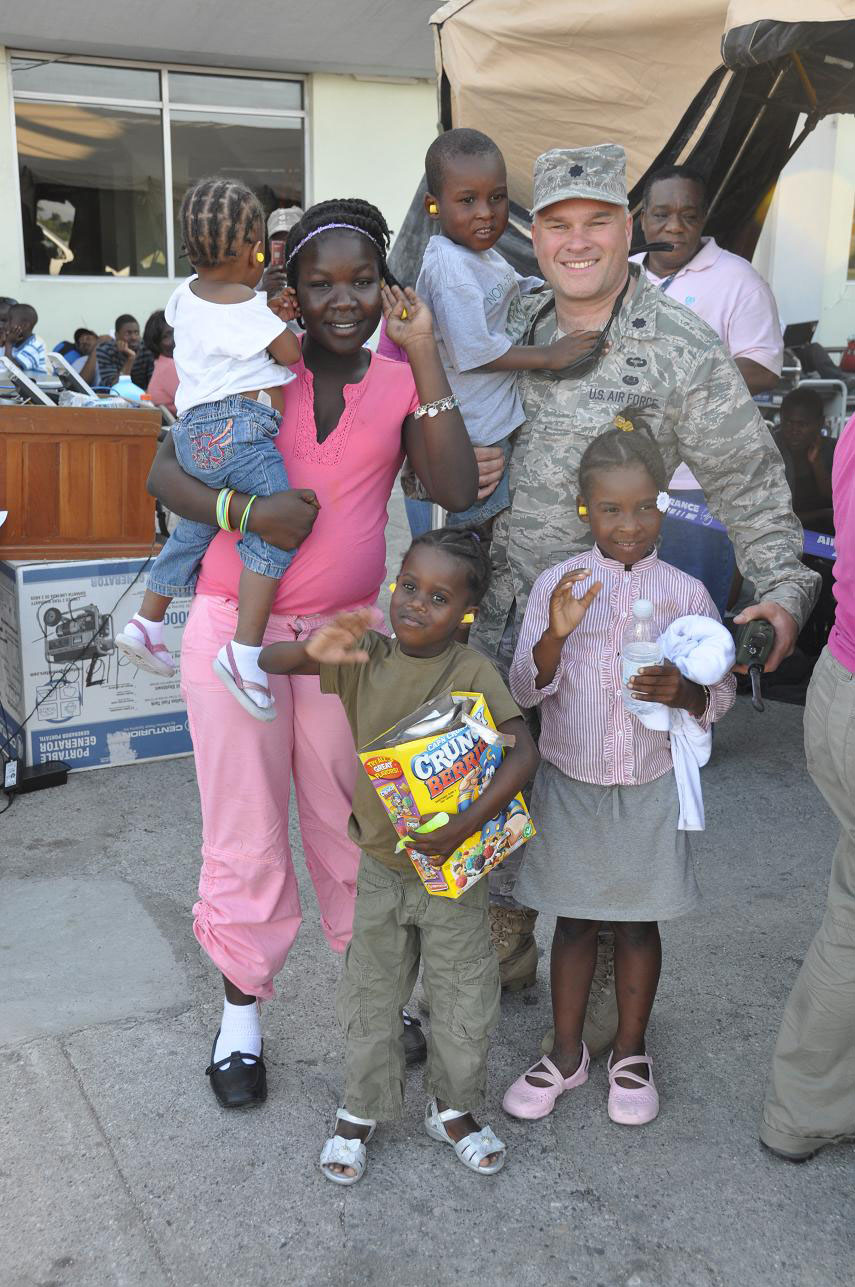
Lawyer assists with relief efforts

Lt. Col. Randon Draper, a lawyer with the18th Air Force Legal Office at Scott Air Force Base, Ill., spends a few moments with the first five Haitian children that he helped send to their adoptive parents after the devastating earthquake. He's been on the ground at Port-au-Prince since Jan. 14 and has helped immigration and state department officials expedite valid adoptions for several hundred children.